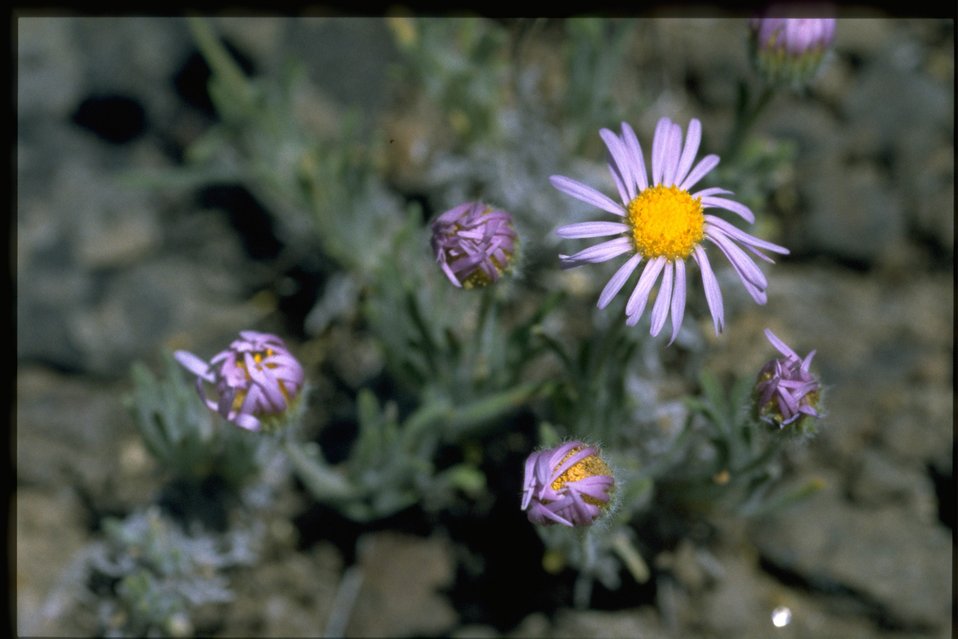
Medium shot of purple cushion fleabane (Erigeron poliospermus var. poliospermus).